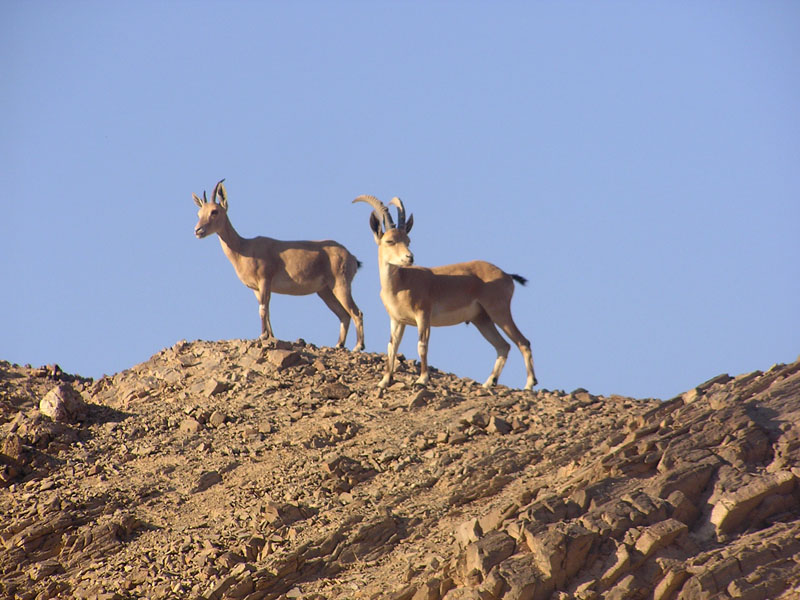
Capra ibex nubiana